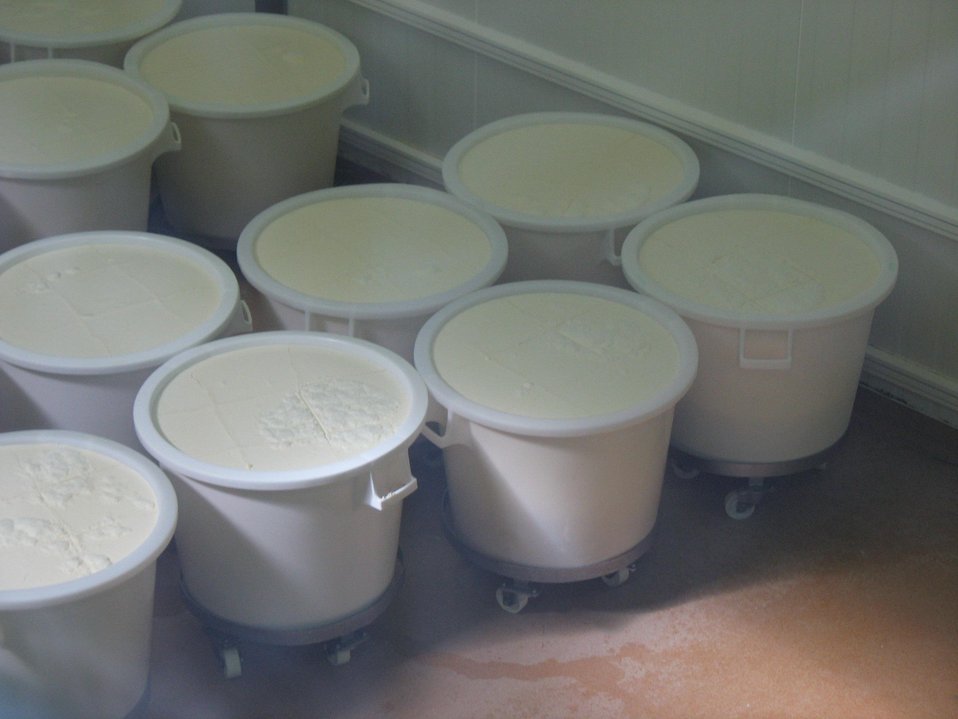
Fran√ßais†: Cette photo a √©t√© prise par moi-m√™me.